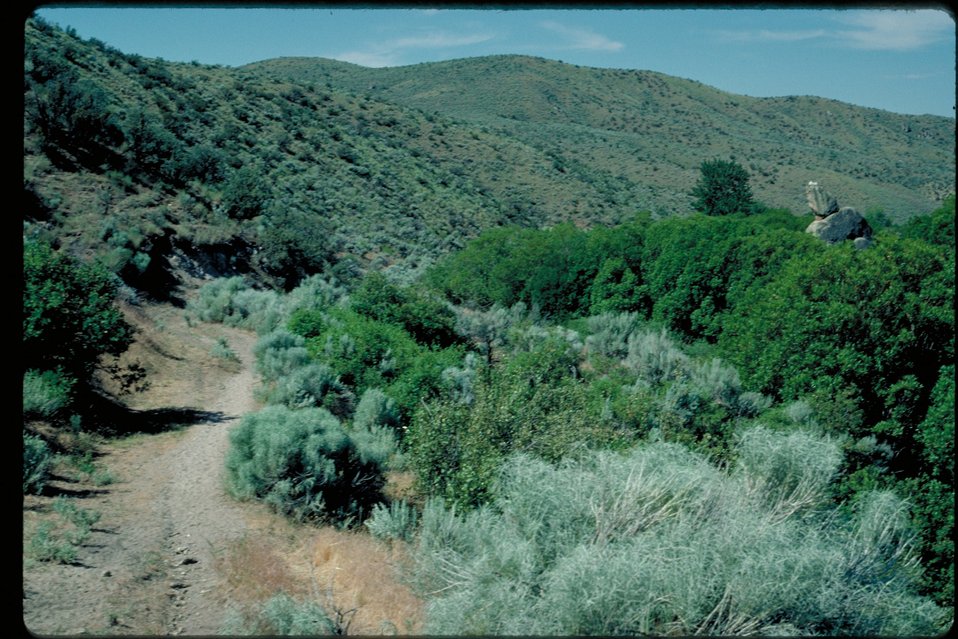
Goodales Cutoff Oregon Trail Lower Snake River District